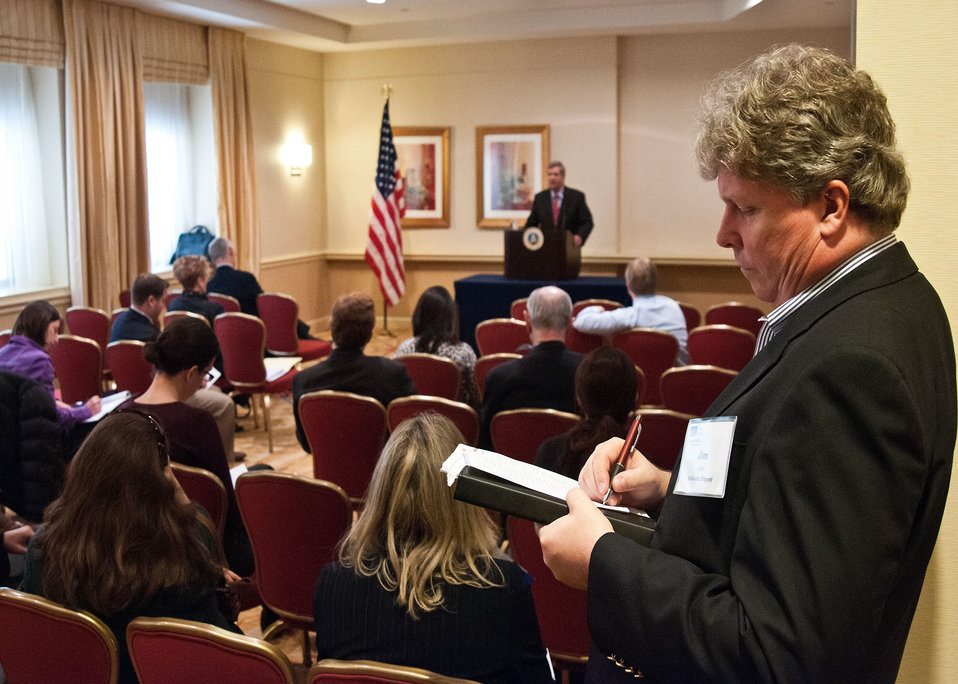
Jim Lane, Editor and Publisher, Biofuels Digest takes notes at press conference held by Agriculture Secretary Tom Vilsack after his speech at the Advanced Biofuels Leadership Conference in Washington, D.C., Tuesday, April 3, 2012. Secretary Vilsack spoke of the economic benefits to rural America, reduced foreign oil consumption and job production. The theme of the conference was, “Go Big, Stay Strong.” As advanced biofuels move from the lab and compete for commercialization, stakeholders are strongly investing while balancing the need to stay in an uncertain policy and financial environment. The conference explained: How to navigate the path to expansion – without becoming overextended. Understanding how policy and finance mechanisms are evolving. How feedstock and end-user markets are emerging and who to partner with, when and how.